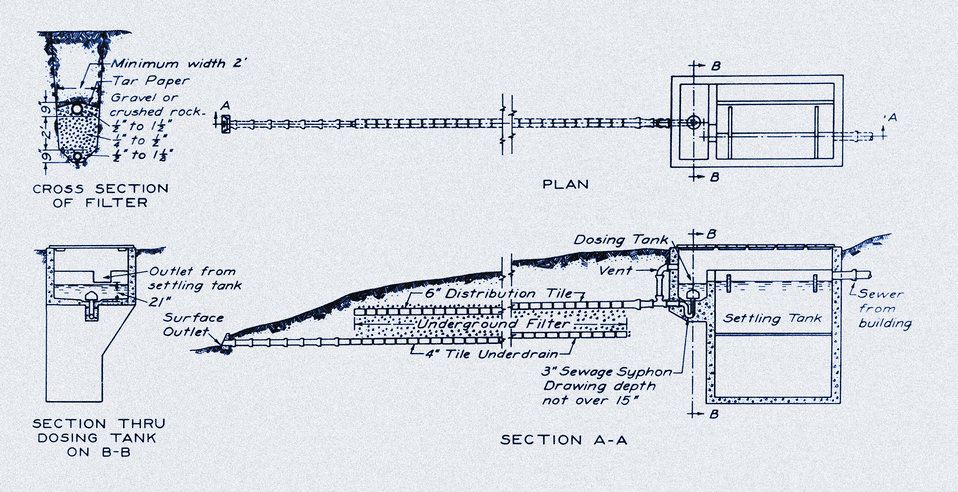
This historic diagram, which had been digitally enhanced and colorized, depicted an Imhoff sewage treatment tank from a number of anterior cross-sectional perspectives, which revealed the tank's chambers. It also explained the capacity of this design to serve the needs of pupils at an average public school in Minnesota. The Imhoff tank was a chamber created to receive, and process raw sewage. At its essence, it was a two-story septic tank. It collected sewage in the upper chamber in which sedimentation took place. The solids fell down sloped inclines to a bottom chamber in which the sludge was collected and digested by bacteria.